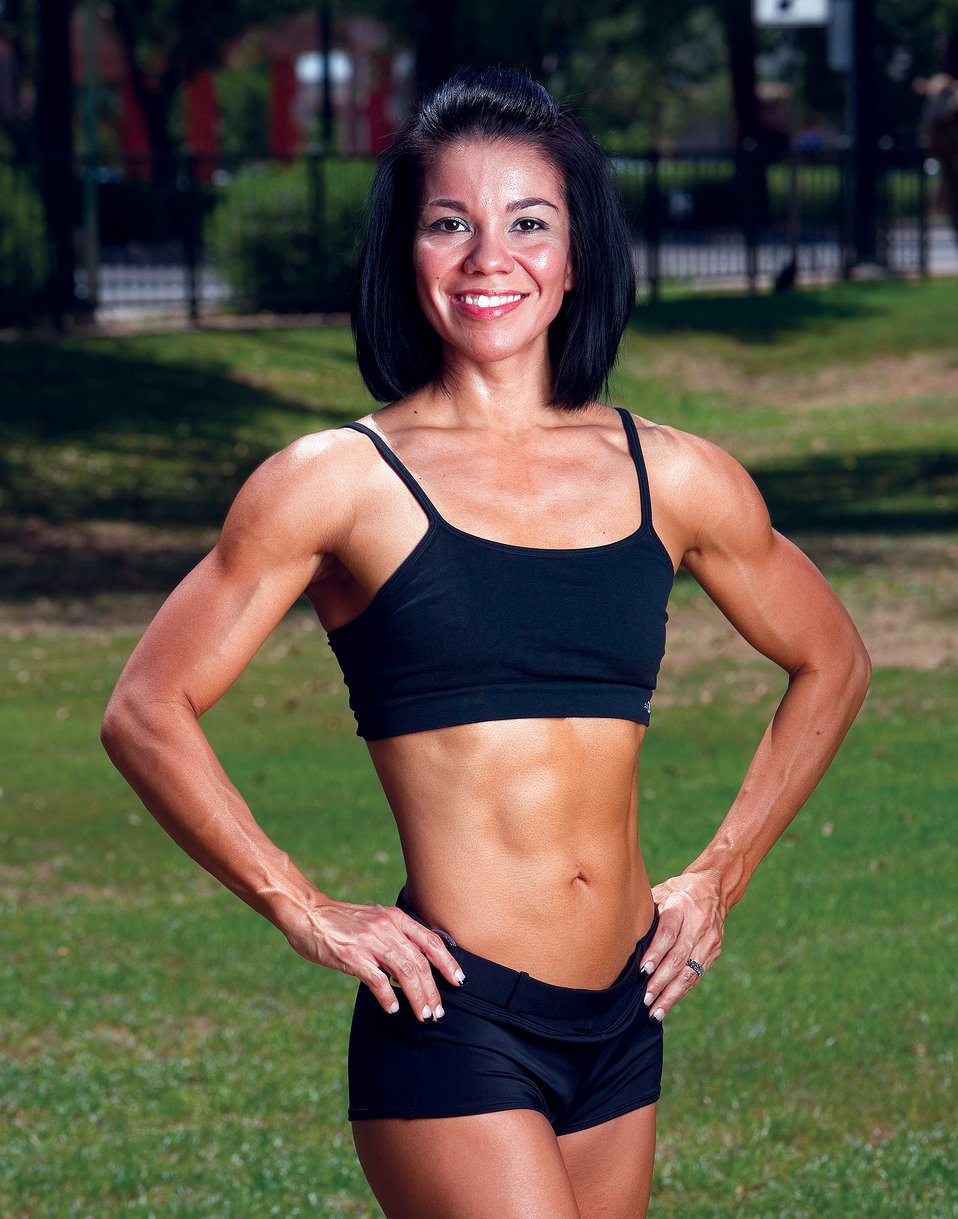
Airman's wife journey: from 'broken' body to body builder

Betty Vasquez, wife of Tech. Sgt. Frank Hatcher, started competing in bodybuilding contests only months after a tumor near her brain stem was removed. In 2005, doctors found the tumor during a MRI scan. Sergeant Hatcher is with the 56th Civil Engineer Squadron at Luke Air Force Base, Ariz.